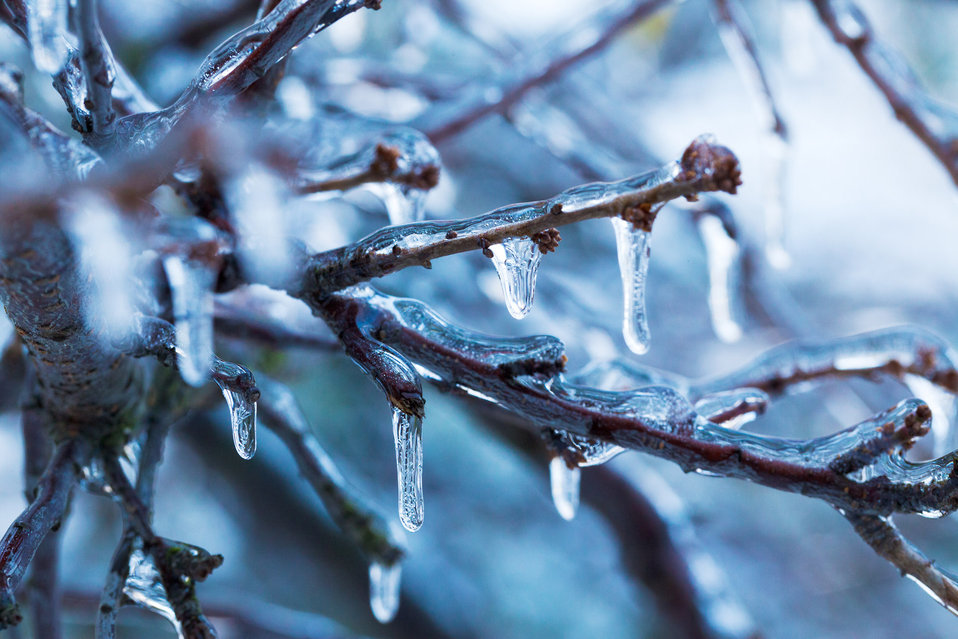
Ice on branches

Icicles hanging from the branches from the rain in winter.